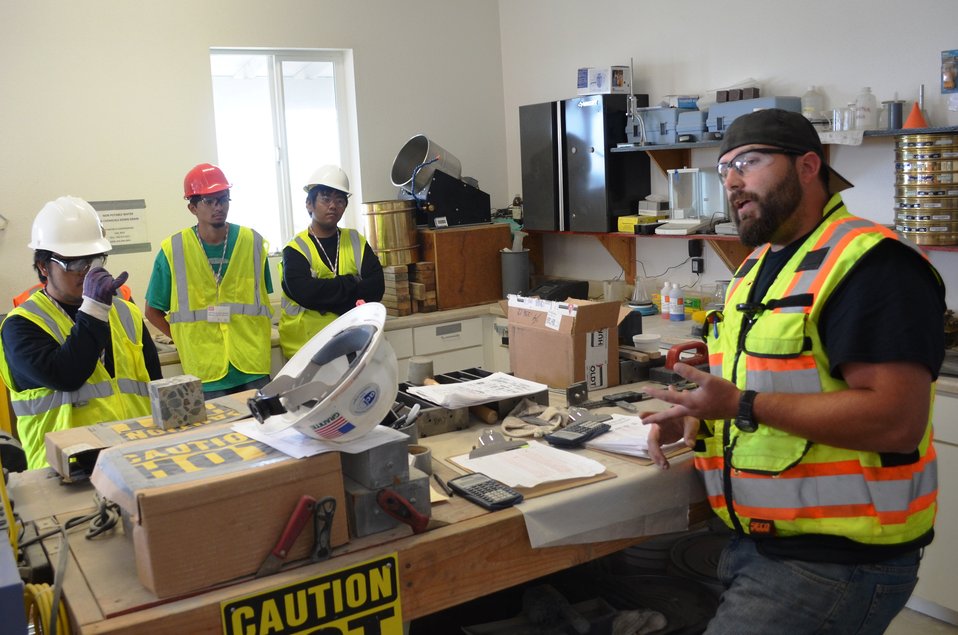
Hiram W. Johnson High School students visit Folsom Dam auxiliary spillway

Granite Construction lab supervisor, Nick Weinmann (right), explains how concrete is tested before being placed for the Folsom Dam auxiliary spillway project in Folsom, Calif., to Hiram Johnson High School students during a tour of the construction site May 20, 2014. The Corps, together with the U.S. Bureau of Reclamation and state and local partners, is building the spillway to reduce flood risk throughout the Sacramento region. Granite is the prime contractor responsible for building the spillway’s new dam. Photo cropped for emphasis.